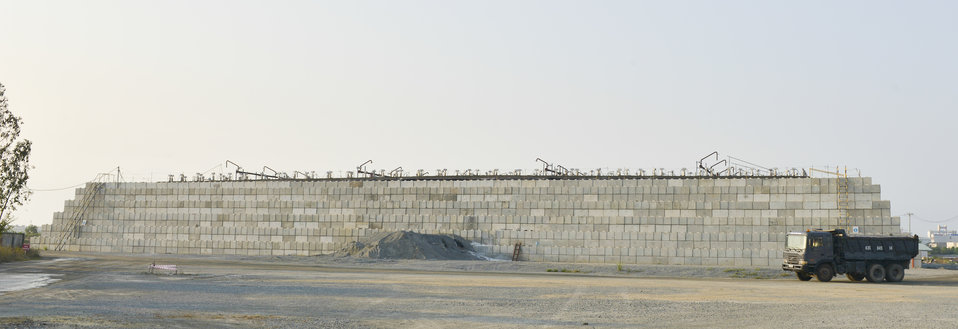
The containment and treatment structure at the Danang Airport Project site.

March 24, 2014.